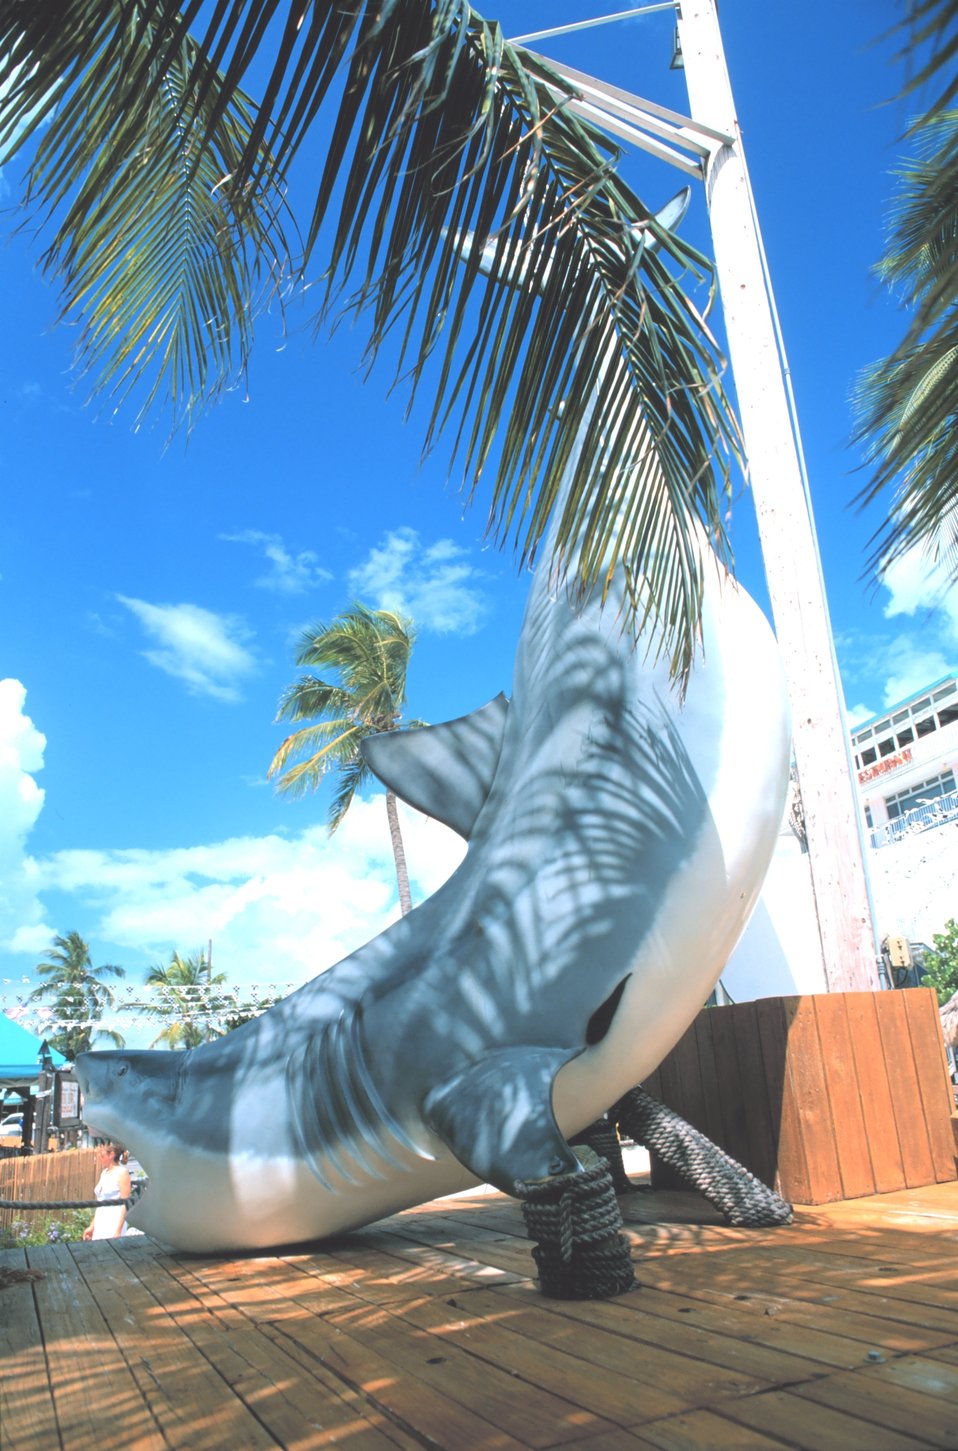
Fish art